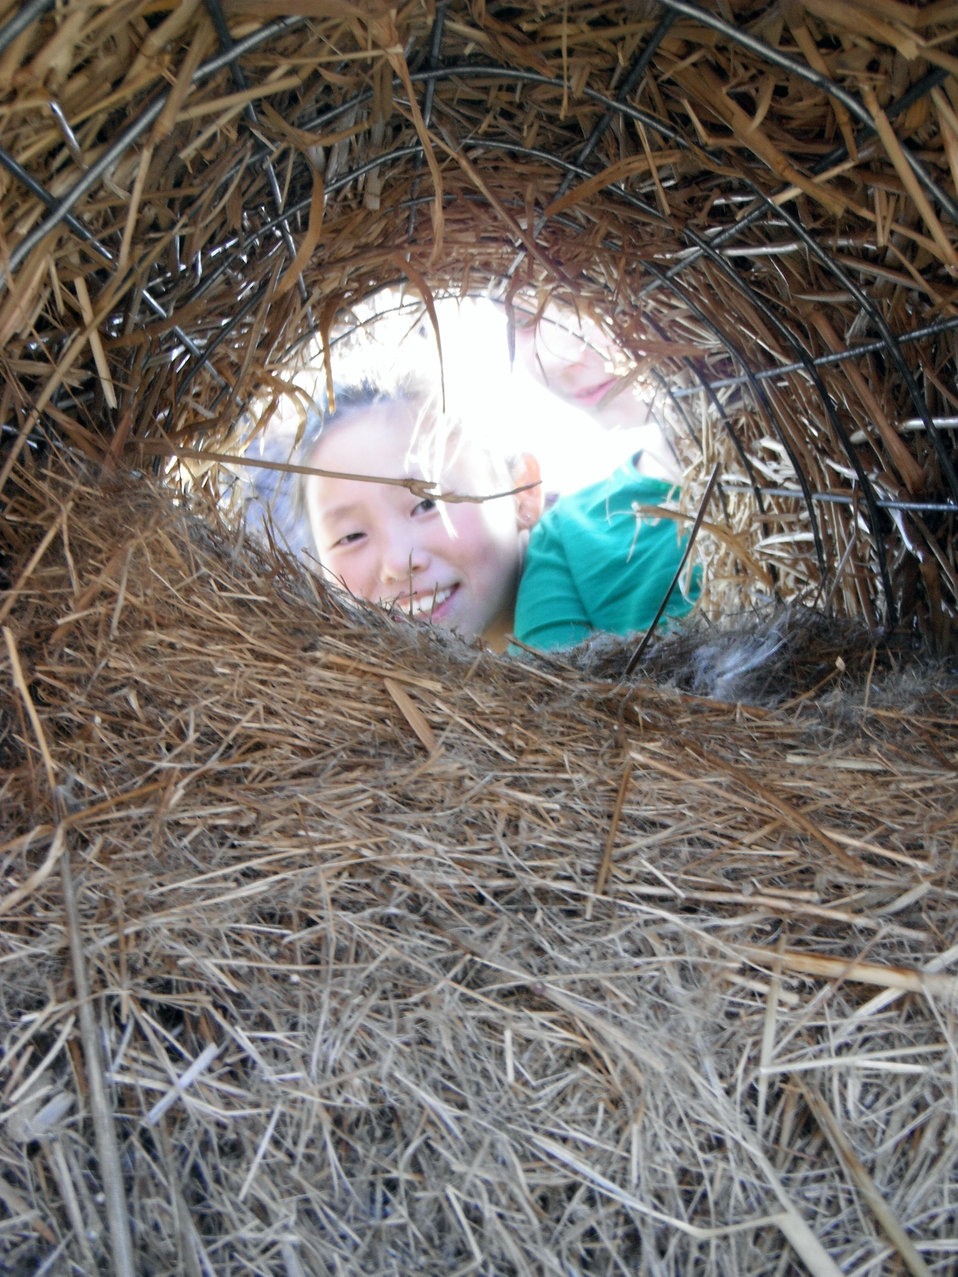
Rebabing Old Hen Houses

A Fergus Falls, Minnesota Prairie Science Class 4th grader volunteered to help rehab this mallard hen house on a wetland downhill from the new prairie at Kennedy Secondary School.